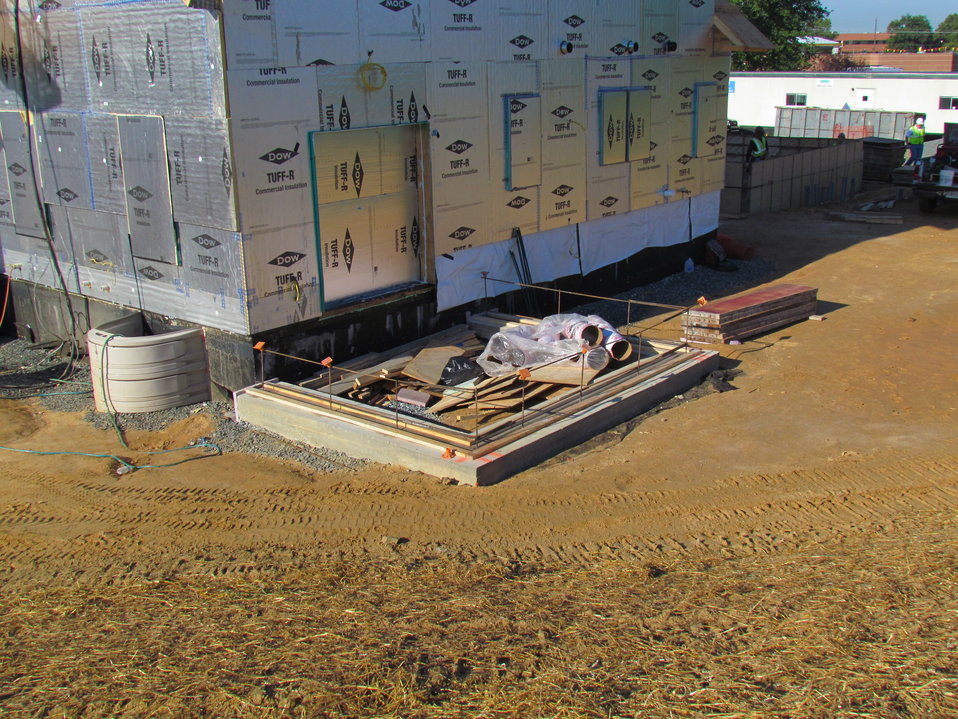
Net-Zero Energy Residential Test Facility - Photo showing concrete footings for porch on rear of facility.